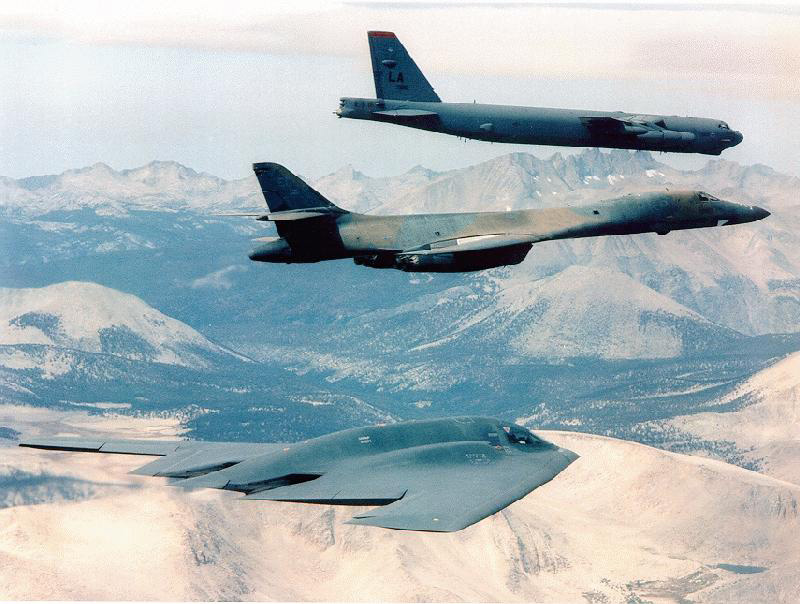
Bomber trio

FILE PHOTO -- The Air Force bomber force in flight together. The B-2 Spirit is a multi-role bomber capable of delivering both conventional and nuclear munitions. The B-1B is a multi-role, long-range bomber, capable of flying intercontinental missions without refueling, then penetrating present and predicted sophisticated enemy defenses. It can perform a variety of missions, including that of a conventional weapons carrier for theater operations. Air Combat Command's B-52 is a long-range, heavy bomber that can perform a variety of missions. The bomber is capable of flying at high subsonic speeds at altitudes up to 50,000 feet. It can carry nuclear or conventional ordnance with worldwide precision navigation capability.